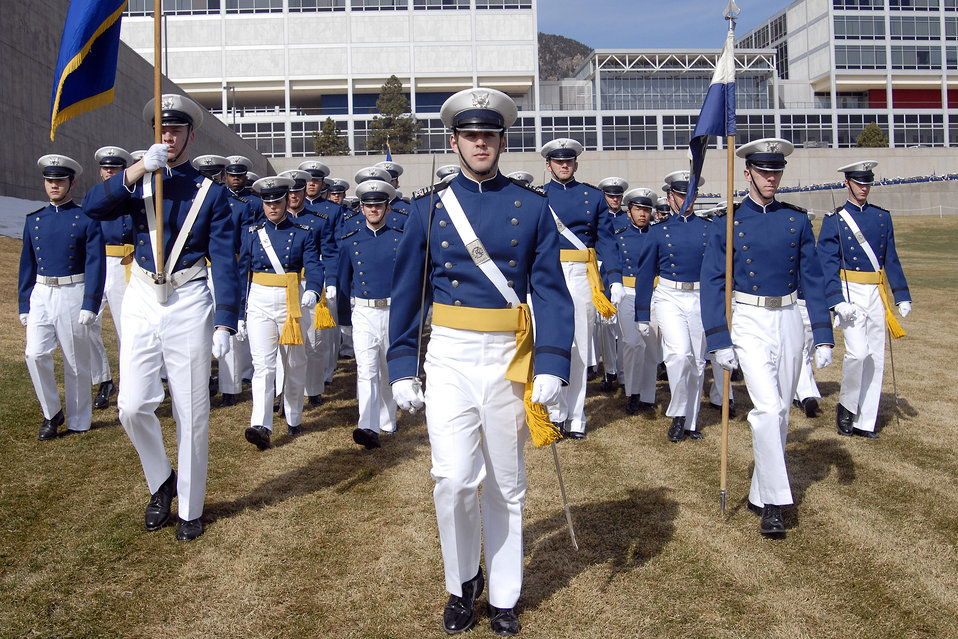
Academy salutes founders

Senior Christopher Jordan leads Cadet Squadron 16 onto the Stillman Parade Field for the Founders Day and Sponsors Day Parade April 5 at the U.S. Air Force Academy in Colorado. The parade, serving two purposes, honored the authorization and founding of the Academy, which began construction July 11, 1955. The parade also honored the 3,500 cadet sponsors; those men, women and families who open their hearts and homes to members of the cadet wing to enhance cadet life and develop officers of character.